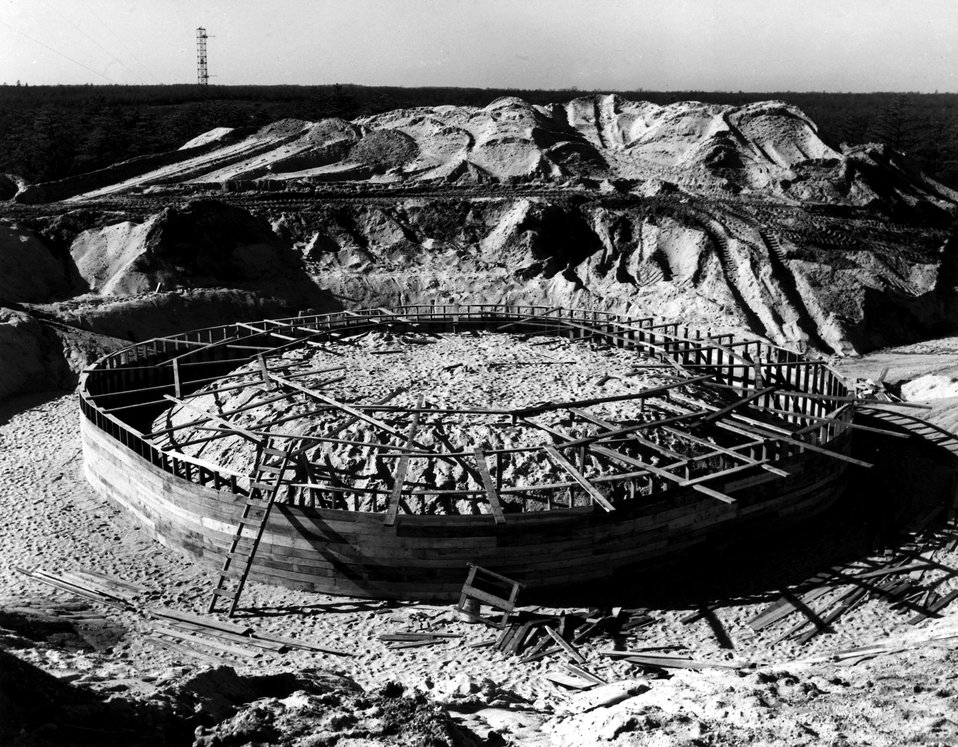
First form for the concrete pad upon which Cosomotron was assembled.